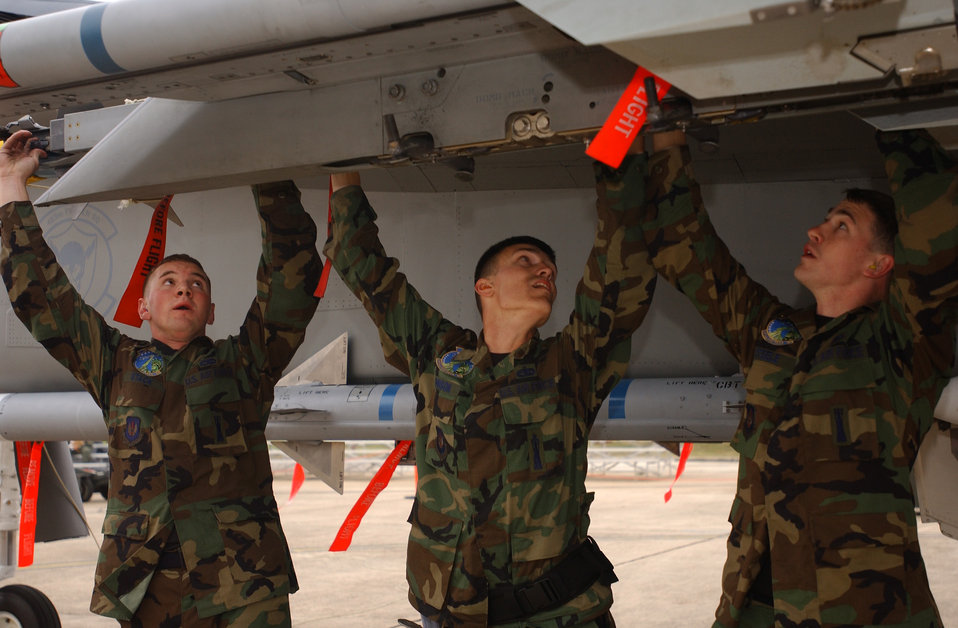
William Tell 2004

TYNDALL AIR FORCE BASE, Fla. -- From the left, Senior Airman Michael Stack, Staff Sgt. Steven Johnson and Senior Airman Randy Steele lift a missile to the wing of an F-15 Eagle during the static load competition of William Tell 2004 here Nov. 10. This is the 50th anniversary of the William Tell competition, which tests an aircrew's ability to perform under combat conditions. All of the Airmen are assigned to the 493rd Fighter Squadron at Royal Air Force Lakenheath, England.